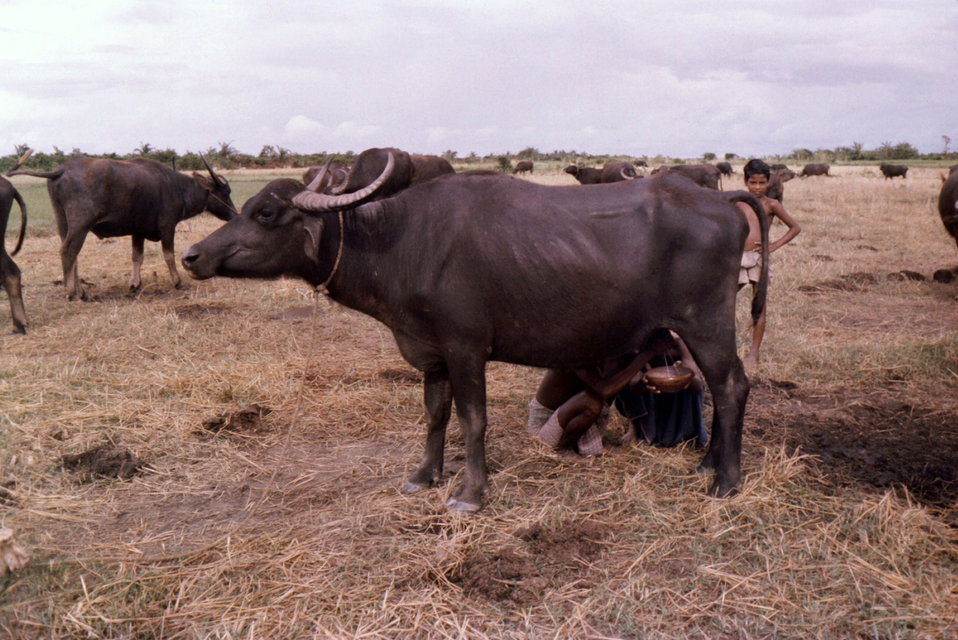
This October, 1975 photograph, depicted a man who was in the process of milking a water buffalo, in the Patuakhali District. of Bangladesh. A second person was helping, by holding the catch-bowl, while a young Bangladeshi boy stood by, watching the activity.